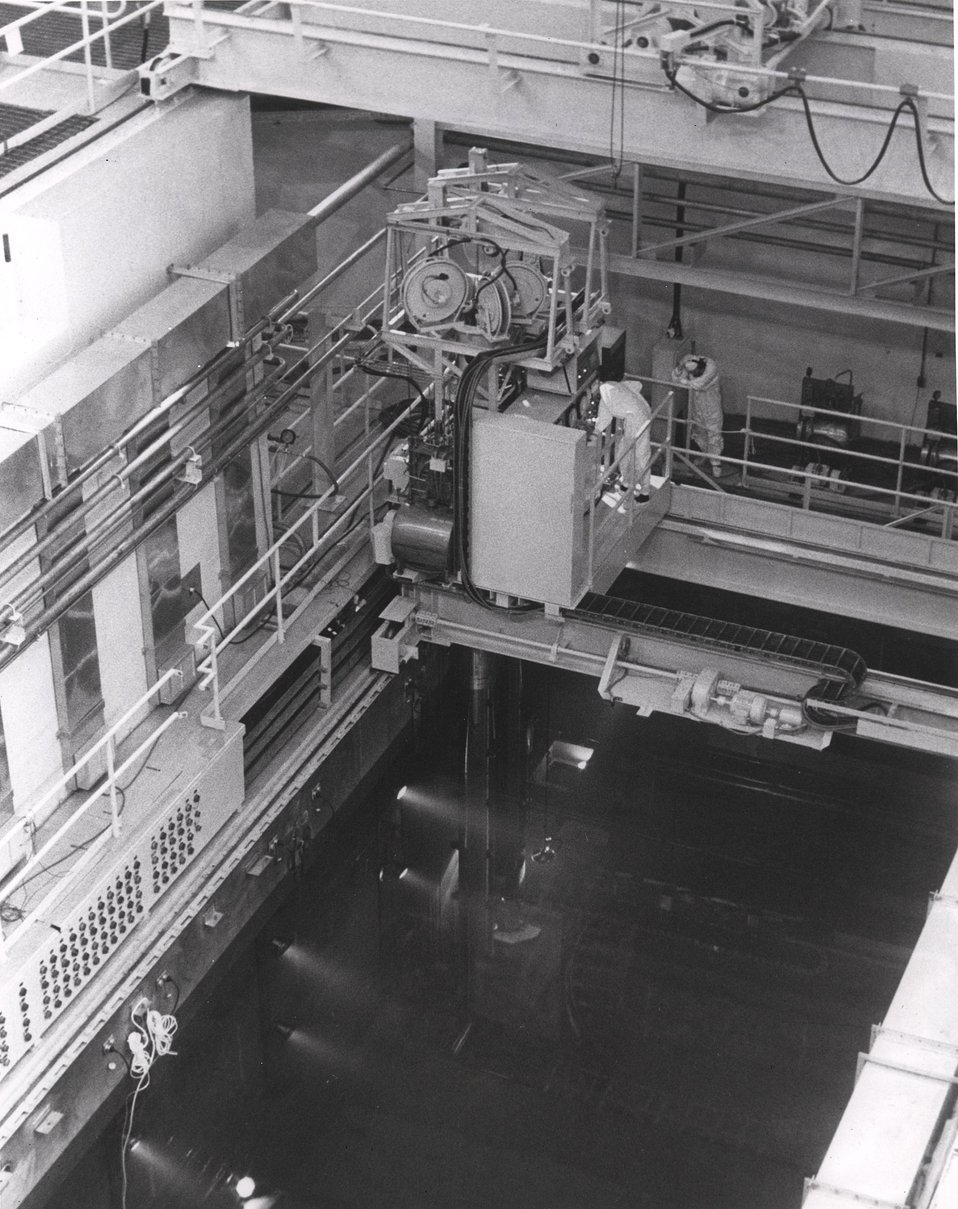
Fuel loading operation at Oconee Nuclear Station Unit No. 2 near Seneca, South Carolina. Circa 1974.